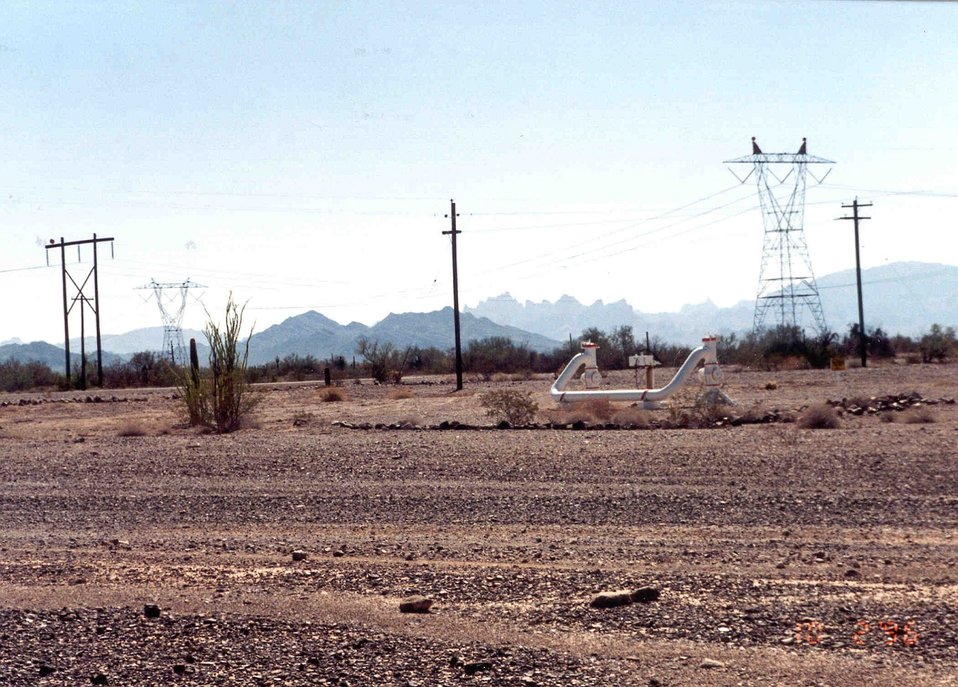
5 major rights-of-way, 3 powerlines, 1 highway, 1 natural gas pipeline